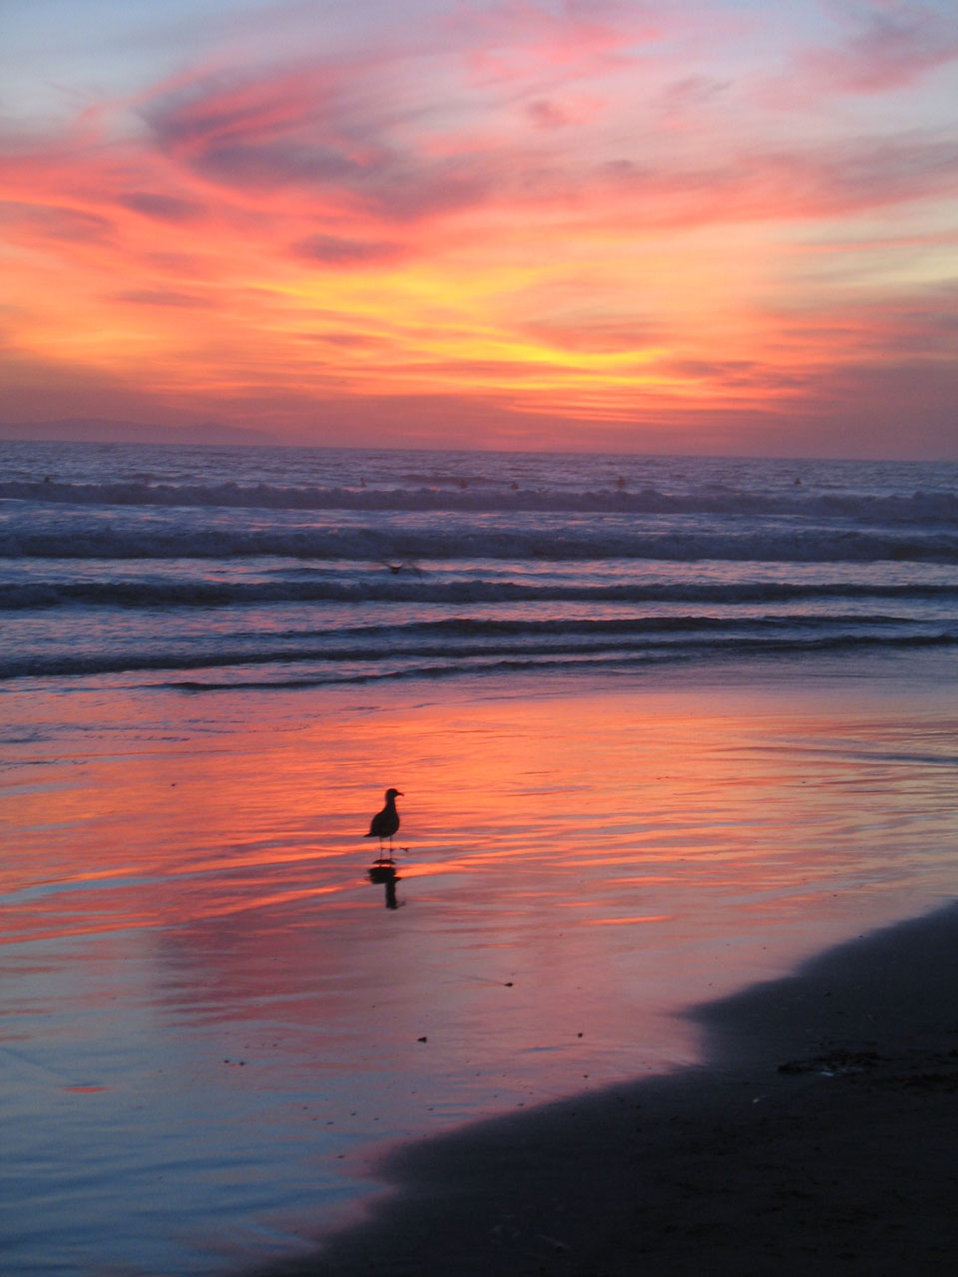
Pacific sunset

Sunset at huntington beach, ca on 4 nov 2006.